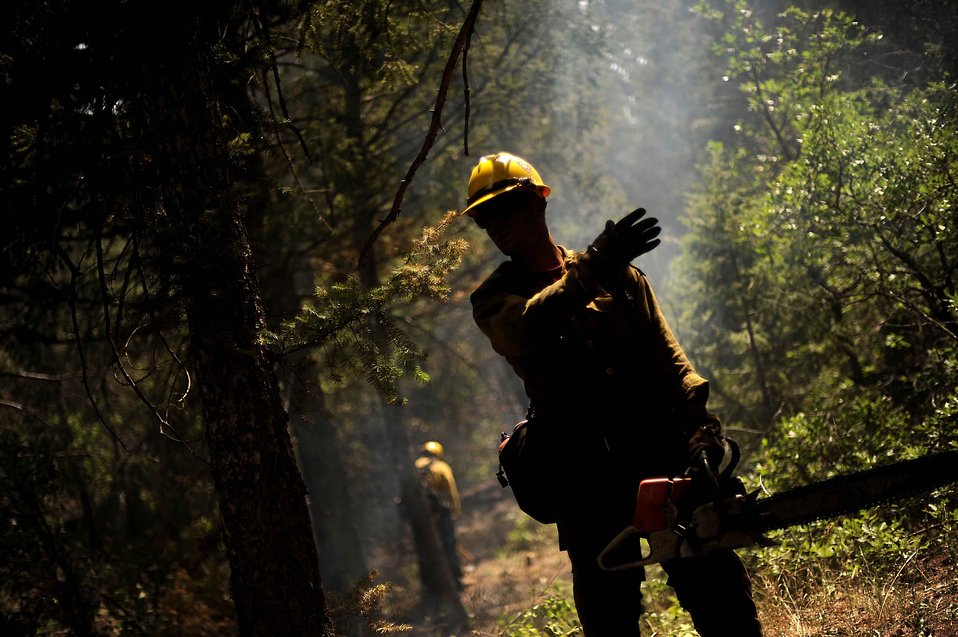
Chop it down

Brad Mabery prepares to cut down a tree with a chainsaw while clearing a fire line in the Mount Saint Francois area of Colorado Springs, Colo., June 28, 2012. Mabery and the rest of the firefighters from the Vandenberg Air Force Base, Calif., Hot Shots are helping to battle several fires in Waldo Canyon.